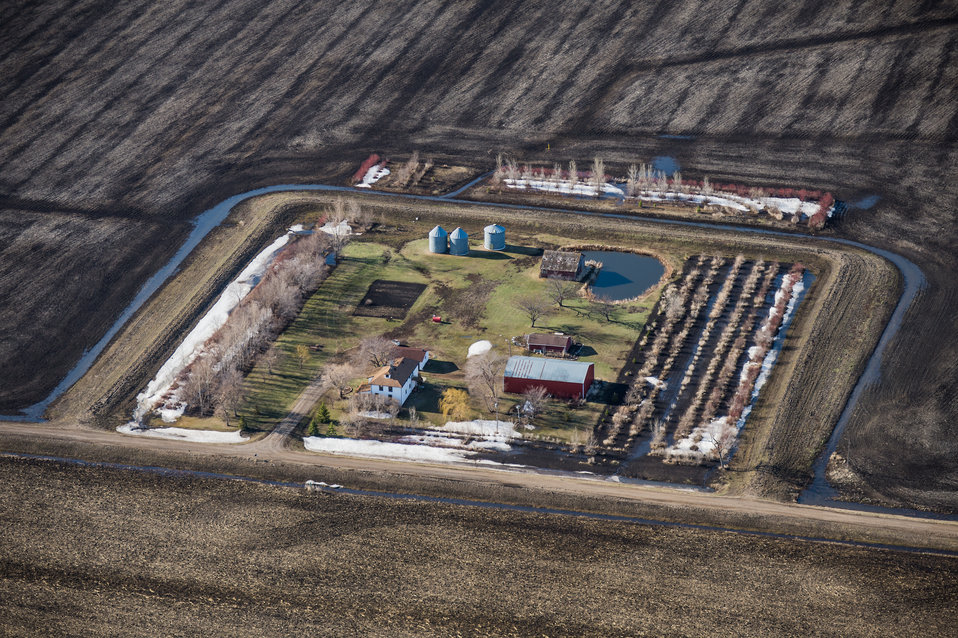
William Lisberg used the U.S. Department of Agriculture (USDA) Environmental Quality Incentives Program (EQIP) to receive an incentive payment to help in the cost of the earthen ring dike construction around his farmstead, in Cass County, ND, on Tuesday, April 30, 2013. A week ago, the farmstead was covered in snow. Now thawed, the water fills the drainages. For information about this and other programs from the USDA the Natural Resources Conservation Service (NRCS) Red River Basin Initiative (RRBI) please see www.mn.nrcs.usda.gov/news/features13/RRBI.html.